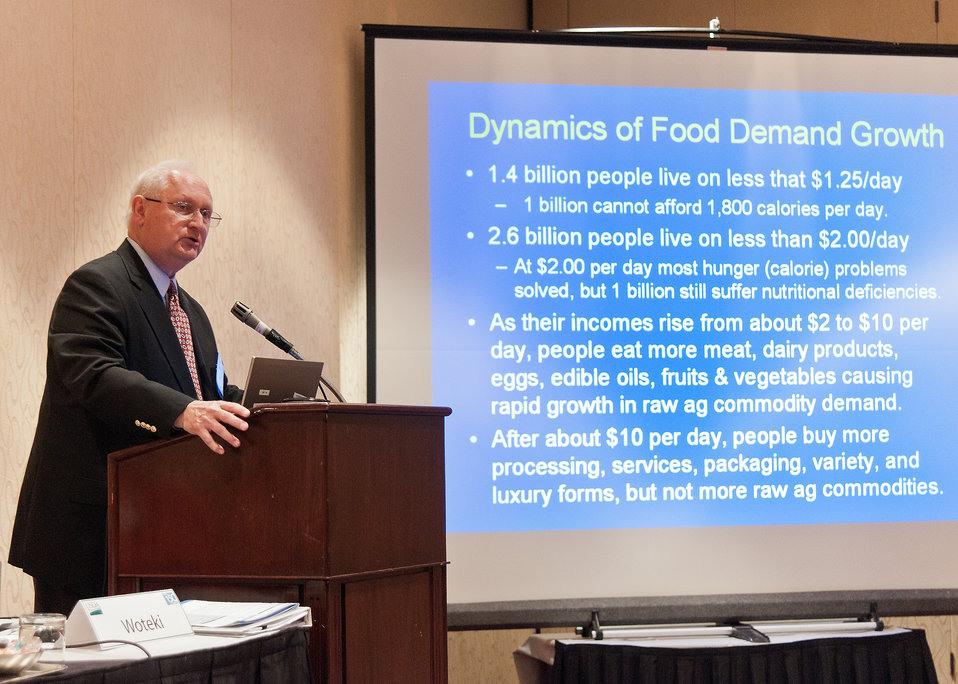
Robert Thompson, Visiting Scholar, The Paul H. Nitze School of Advanced International Studies, Johns Hopkins University, Washington, D.C., spoke at the Global Food Security afternoon breakout session at the 2012 Agricultural Outlook Forum, “Moving Agriculture Forward, Growing, Innovating and Celebrating 150 Years” held at the Crystal gateway Marriott Hotel Arlington, Virginia, Friday, February 24, 2012. The session discussed and reviewed challenges associated with feeding a growing world population with a currently strained resource base.